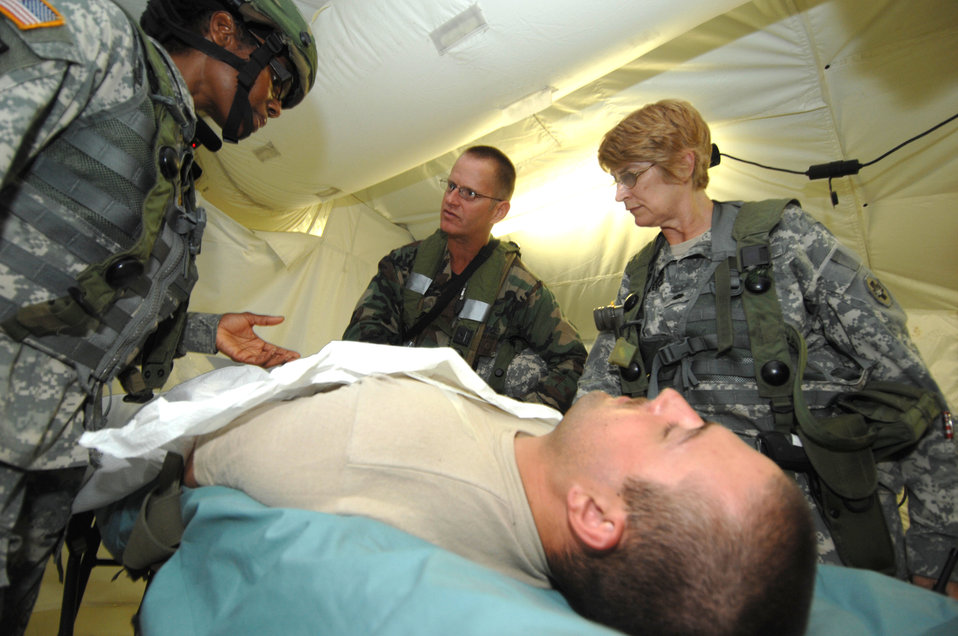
Joint Readiness Training Center 2009, Ft. Polk, Louisiana

Airmen and Soldiers work together in the combat support hospital Aug. 19 during Joint Readiness Training Center Exercise 09-09 at Fort Polk, La. The exercise provides realistic training using scenarios that allow integration between joint military organizations, host nations and civilian role players. Units from the Air Force, Army, Marine Corps and the Canadian and Belgian air forces trained together during the exercise to provide quality care to sick and injured personnel in real-world environments.